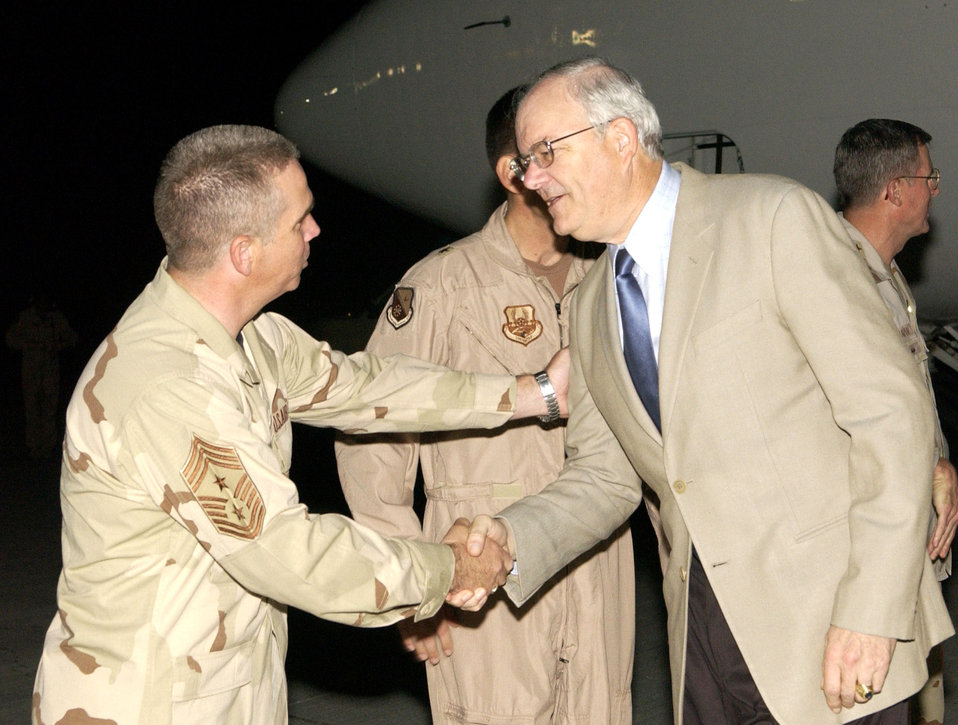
Desert duty

SOUTHWEST ASIA (AFPN) -- Secretary of the Air Force Michael W. Wynne shakes hands with Chief Master Sgt. Dwayne Hopkins, 379th Air Expeditionary Wing command chief. This is Secretary Wynne's first tour to the region.